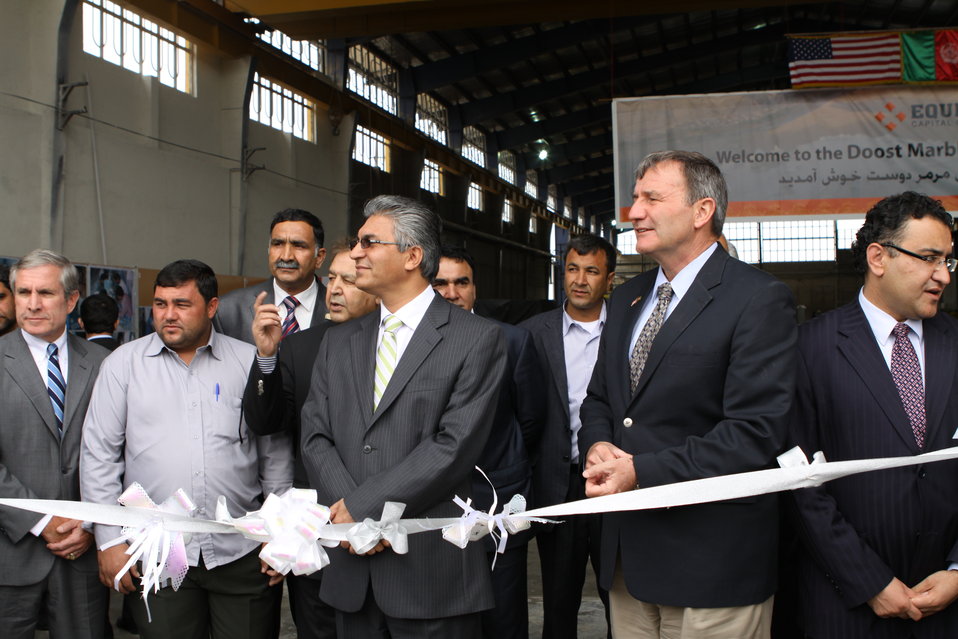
100525 Hirat Marble Conference 061